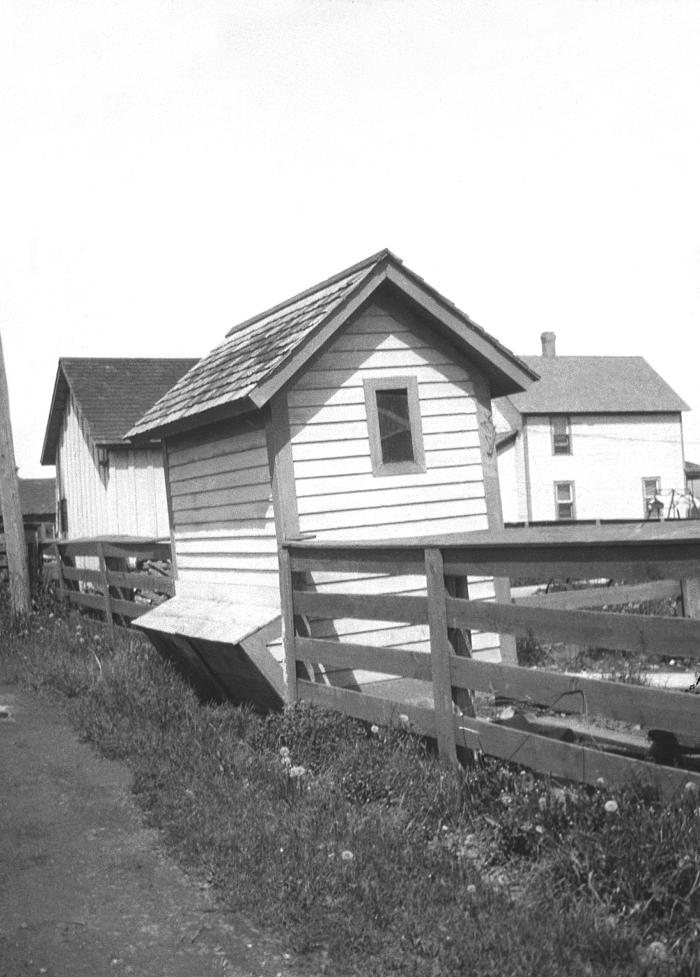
This historic 1915 photograph depicted a removable-box type privy located in Sibley, Minnesota. It was one of a series of instructional photographs used by the Minnesota Board of Health to train public health workers. The focus of the images, and the training effort was on protecting water supplies from bacterial contamination from sources such as incorrectly placed, or poorly designed privies.